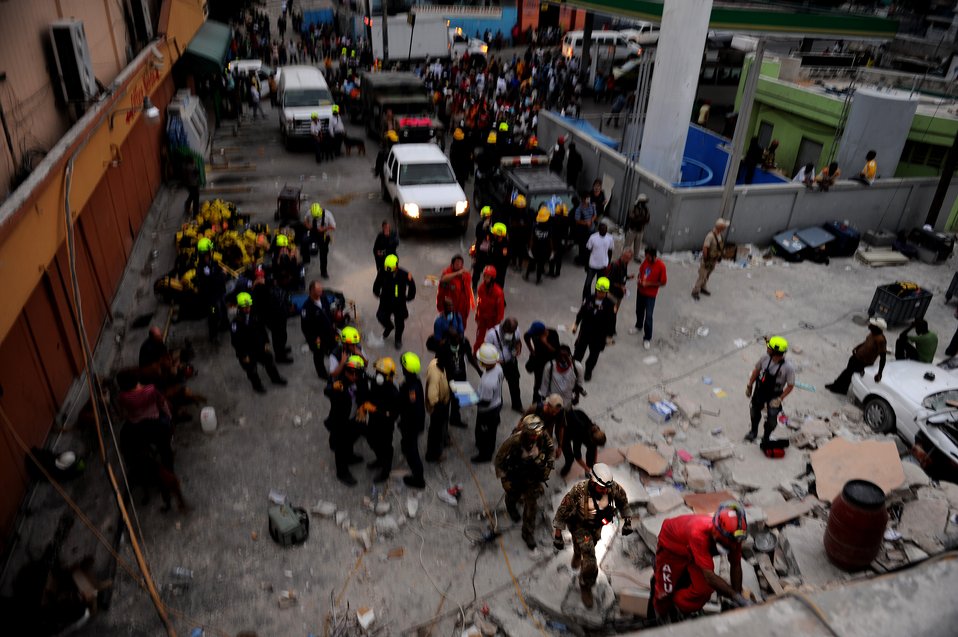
AFSOC pararescuemen work to save lives

A U.S. Air Force pararescueman from the 23rd Special Tactics Squadron at Hurlburt Field, Fla., and members of various rescue teams climb a ladder in Port-au-Prince, Haiti, Jan. 19, 2010, to get to a 25-year-old Haitian woman who has been trapped for seven days in a space in a collapsed building.